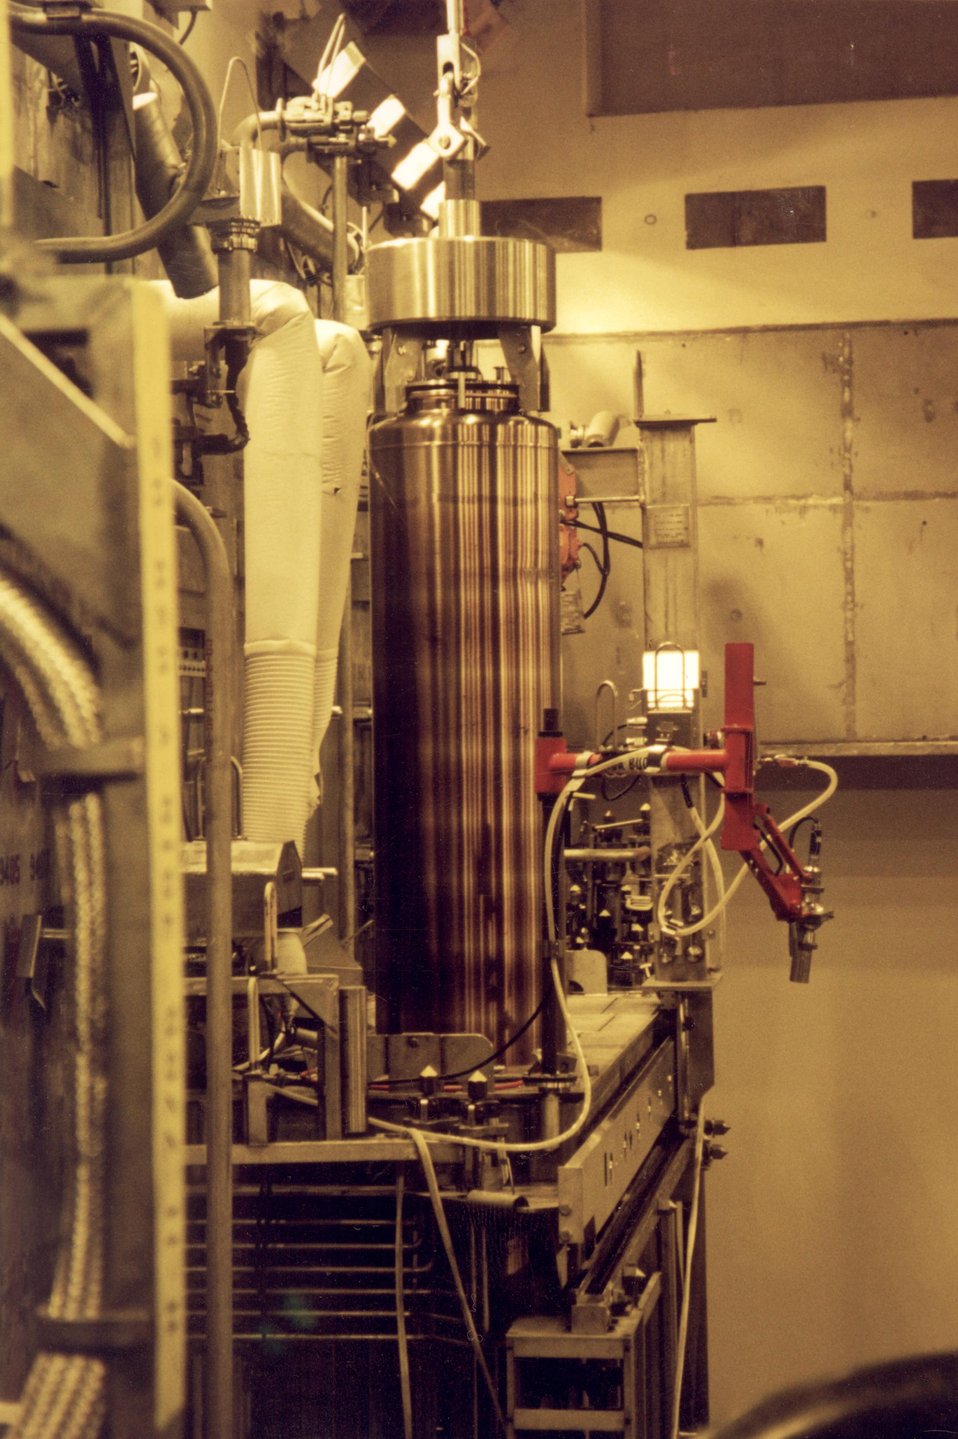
THE FIRST CANISTER OF VITRIFIED HIGH-LEVEL WASTE COMPLETED AT THE WVDP, JULY 5, 1996.

THE WEST VALLEY DEMONSTRATION PROJECT, NEW YORK AND THE DEFENSE WASTE PROCESSING FACILITY AT THE SAVANNAH RIVER SITE ARE THE NATION'S HIGH-LEVEL NUCLEAR WASTE VITRIFICATION PLANTS. IN THIS PHOTO THE FIRST CANISTER OF HIGH-LEVEL WASTE GLASS IS POSITIONED FOR PLACEMENT INSIDE THE WELD STATION FOR CANISTER LID WELDING.